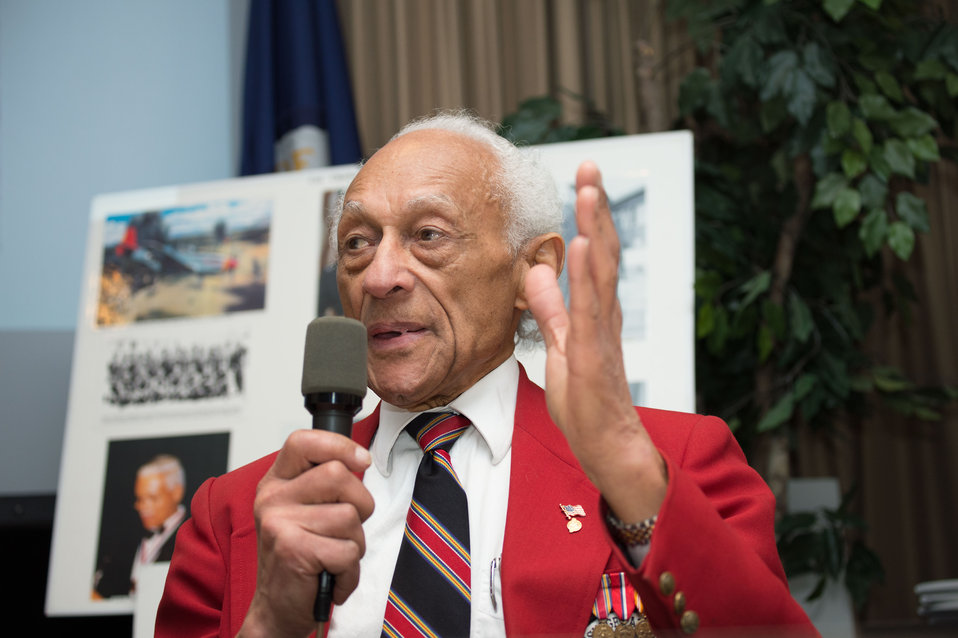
Tuskegee Airmen Incorporated (TAI) National Historian William F. Holton speaks at the U.S. Department of Agriculture's (USDA), Office of the Assistant Secretary for Civil Rights (OASCR) program “In conversation With Tuskegee Airmen”, which honored the airmen’s successes both overseas and at home at USDA in Washington, D.C. on Thursday Mar. 27, 2014. Holton spoke about his experiences in the U.S. Navy. Questions from the audience provided several opportunities for discussion about civil rights challenges and how they achieved success and respect.